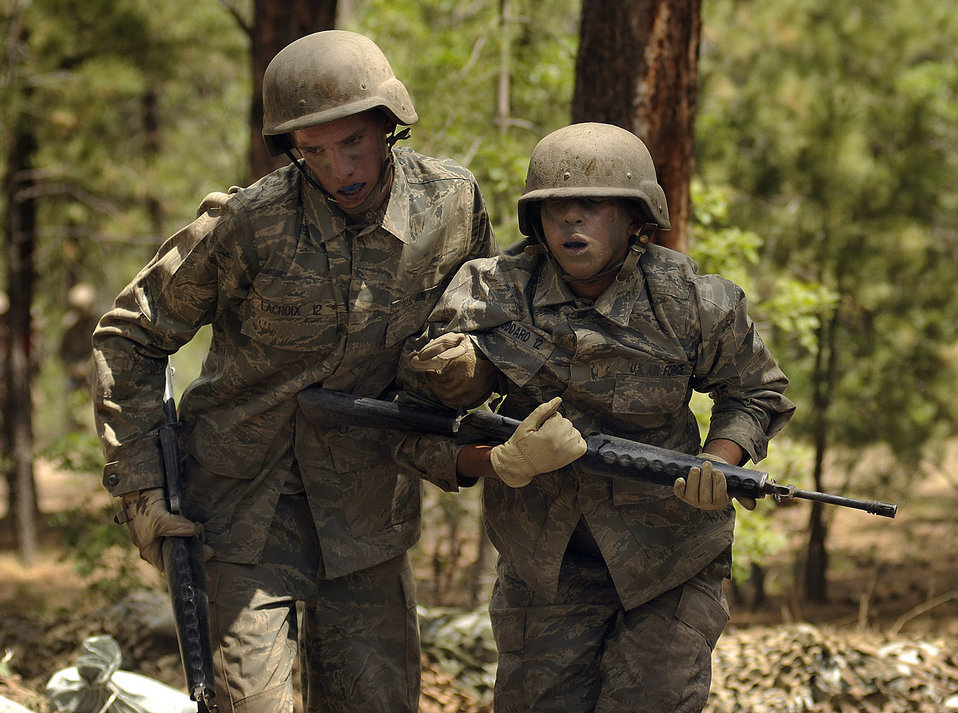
Assault course

U.S. Air Force Academy basic cadet Daniel Lacroix assists basic cadet Calvin Woodard on the assault course during basic cadet training in the Jacks Valley training area July 25.